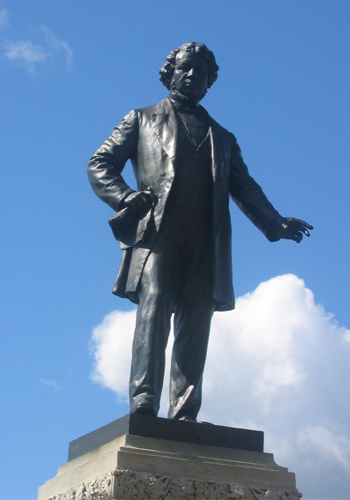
Statue de Thomas D'Arcy McGee, Colline du Parlement, Ottawa